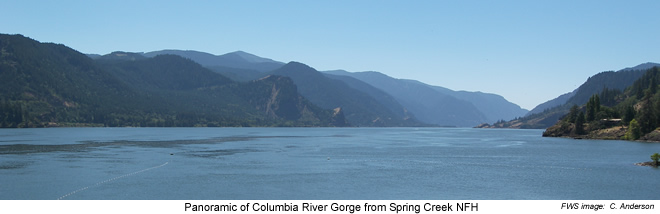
Panoramic of Columbia River Gorge - Spring Creek NFH